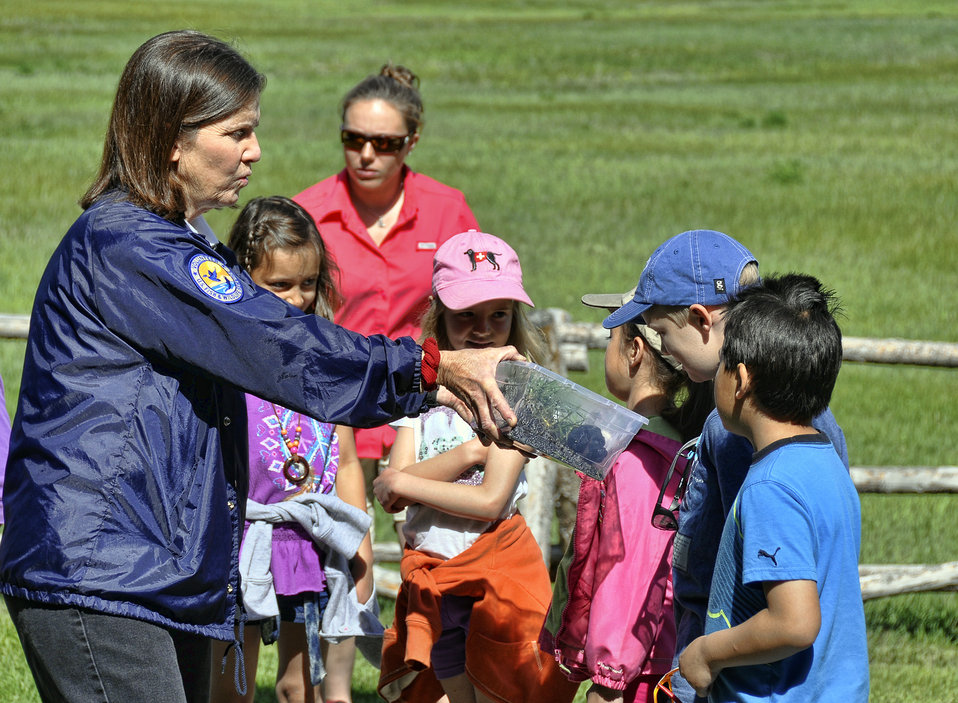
Using Their Senses

Children experience what the inside of a homestead may have smelled like by taking turns sniffing a container filled with sod and charcoal during a lesson at the historic Miller House.

Credit: USFWS / BJ Baker, National Elk Refuge volunteer